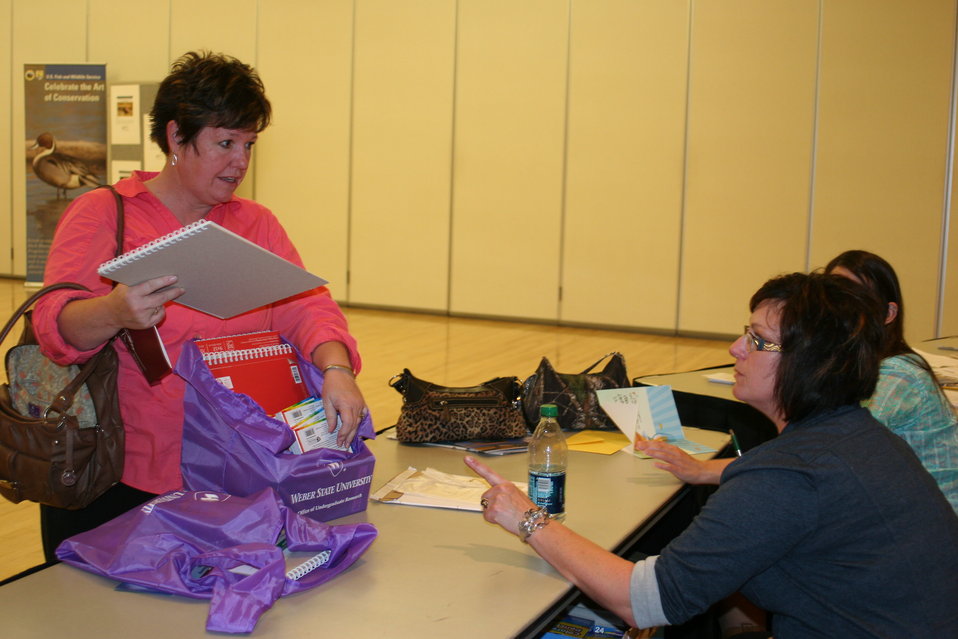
Outreach

Photo Credit: Suzanne Fellows / USFWS
The U.S. Fish & Wildlife Service sponsored the 2012 Federal Duck Stamp Art Contest September 28 and 29 in Ogden, Utah, at Weber State University. A panel of five judges was responsible for choosing the art work used to design the 2013-2014 Migratory Bird Hunting and Conservation Stamp.